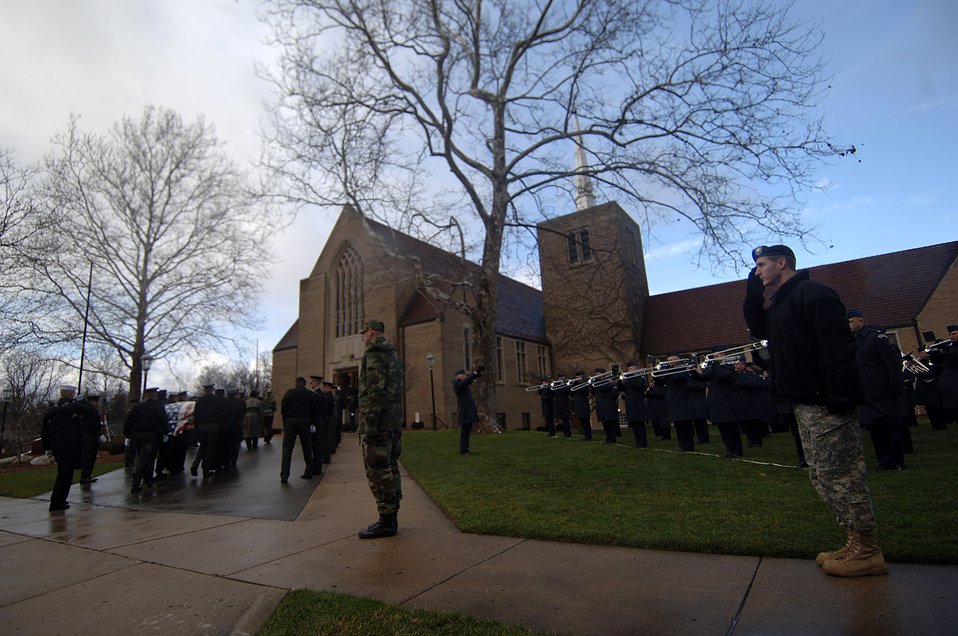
Air Force band plays final tribute for President Ford

Armed Forces Honor Guard members and Air Force musicians rehearse Jan. 1 for President Gerald R. Ford's funeral service at Grace Episcopal Church in Grand Rapids, Mich.